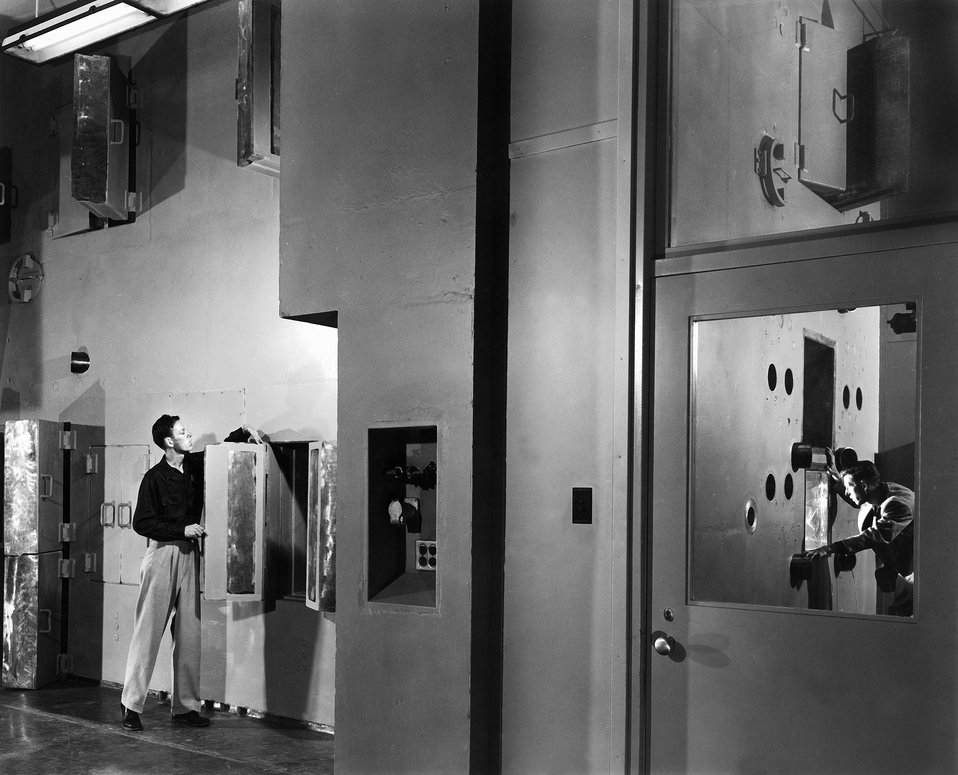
Seeing Double Ed Westcott Self Portrait

7998-1 DOE photo Ed Westcott Hot Cells Oak Ridge National Lab. Oak Ridge Tennessee 4-30-1952